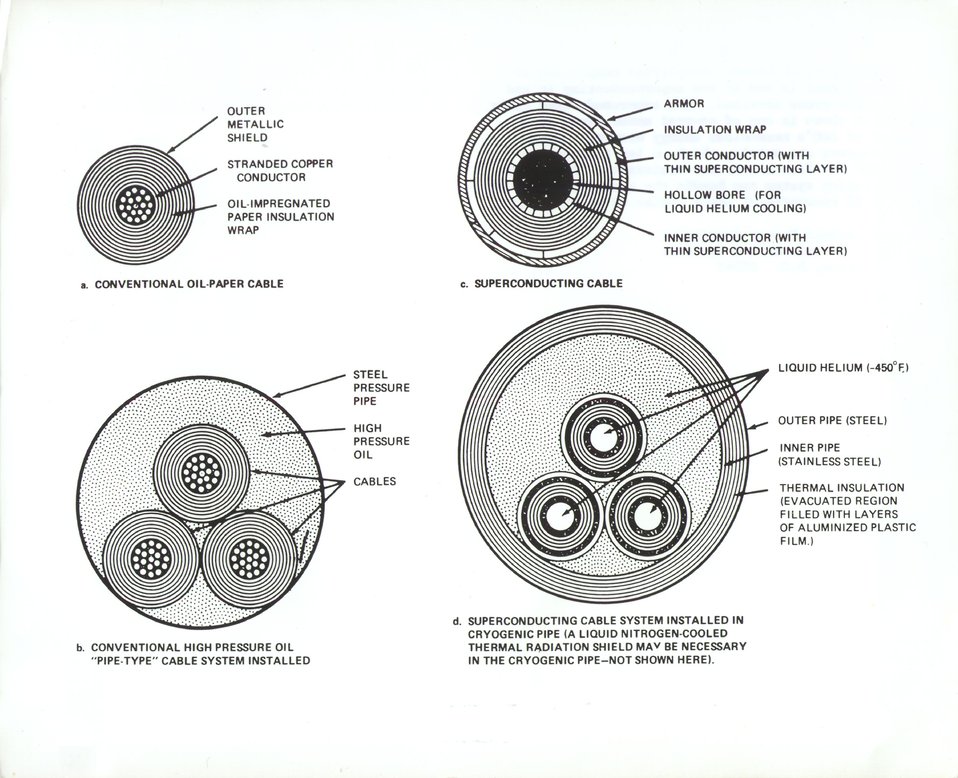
Simplified comparison of conventional (a and b) and superconducting (c and d) cable cross sections. The superconducting cable system shown is one of several under study as a part of Energy Research and Development Administration's nonnuclear energy mission. c. 1973